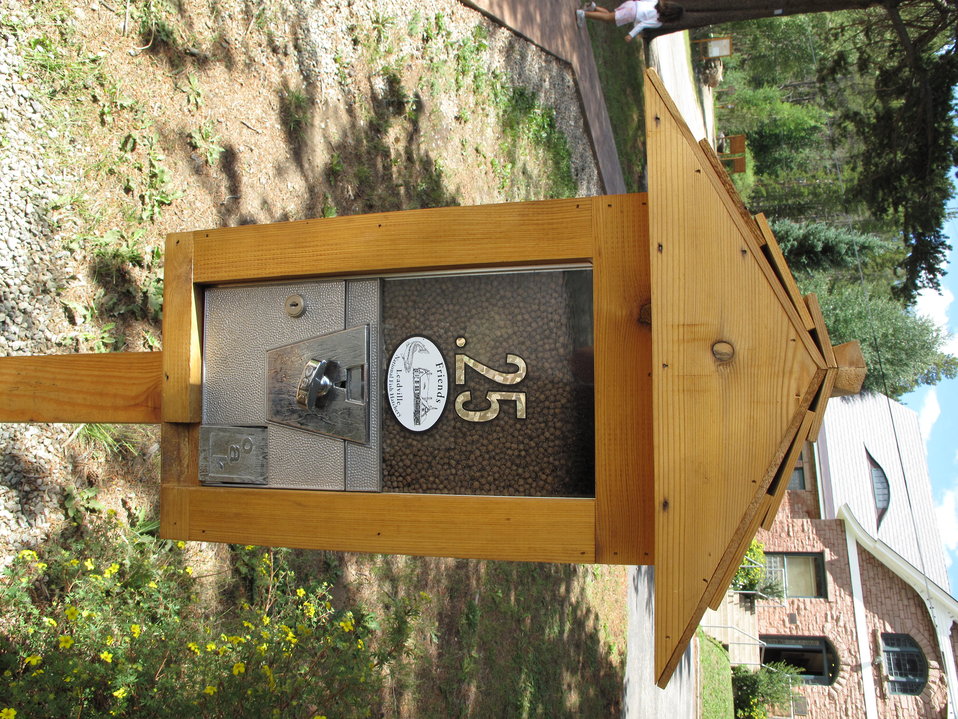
Leadville National Fish Hatchery

The hatchery sells fish pellets for 25 cents. Visitors are welcome to feed the fish in the outdoor raceways.